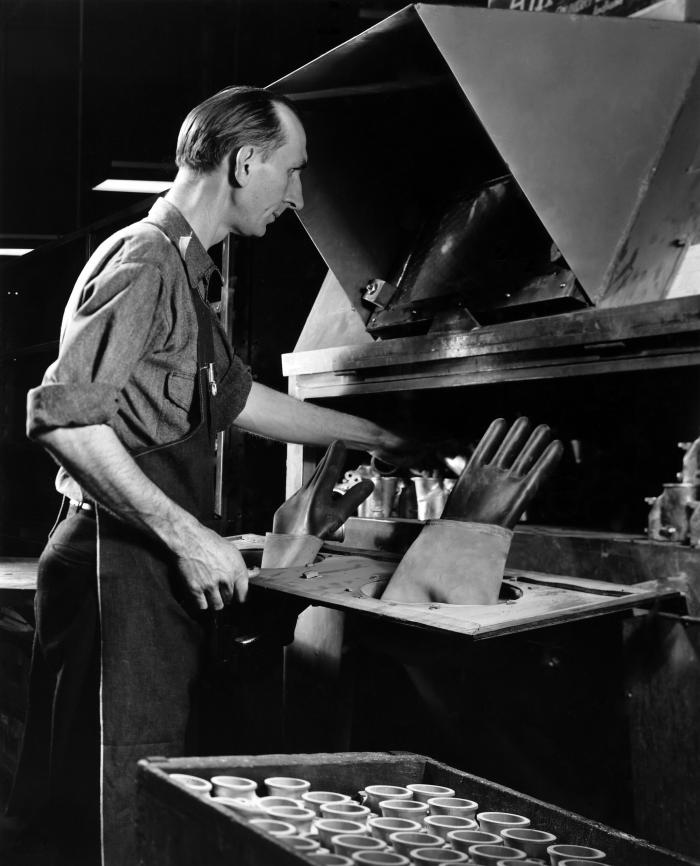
This historic image, provided by the Center for Disease Control's (CDC), National Institute for Occupational Safety and Health (NIOSH), depicted an industrial worker who was standing at a closed, though ventilated hood, which was equipped with a sealed viewing window. The man was already wearing an apron, and had before him, a pair of heavy-duty work gloves, but was not wearing any filtered breathing mask, though the material with which he was working was potentially toxic enough when heated to warrant being placed beneath a ventilated hood. The image was used in the September, 1947, issue of the 'Industrial Bulletin'.